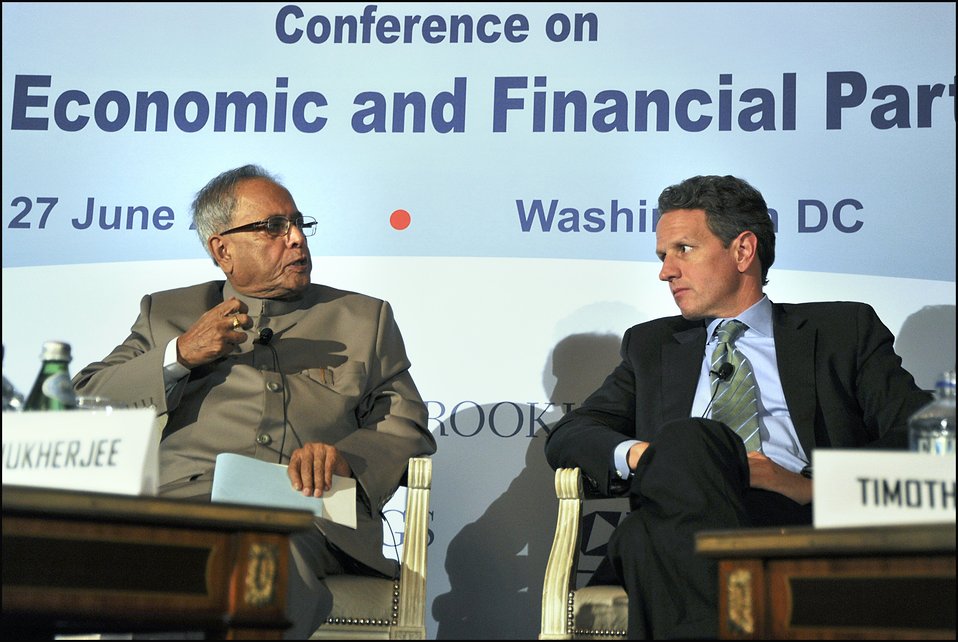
2011 U.S.-India Partnership

On Monday afternoon, Secretary Geithner participated in a moderated discussion with Minister Mukherjee at a forum hosted by the Confederation of Indian Industry (CII) and the Brookings Institution.